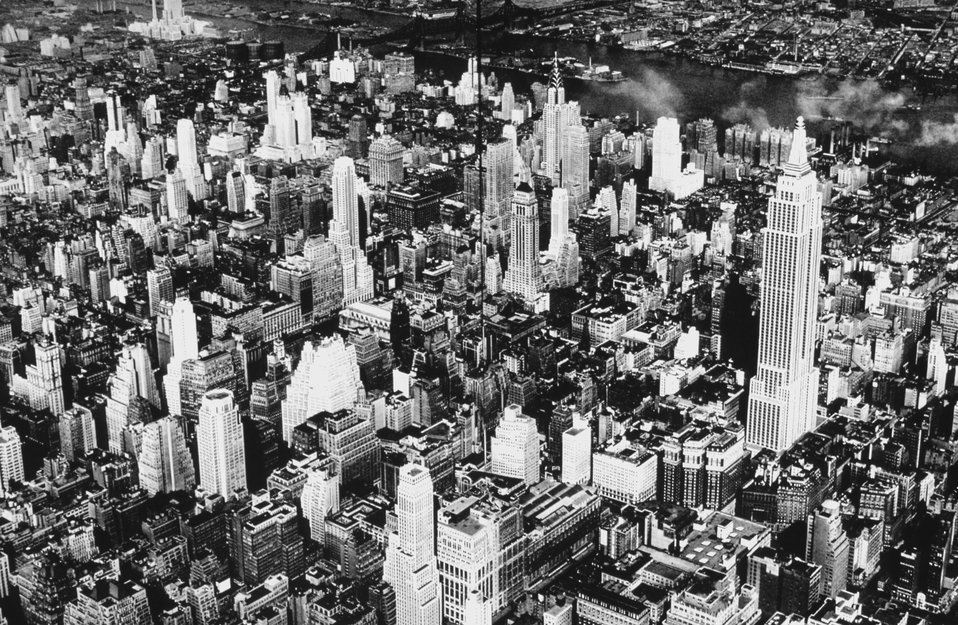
The center of New York. In: 'Flug Und Wolken', Manfred Curry, Verlag F. Bruckmann, Munchen, 1932.